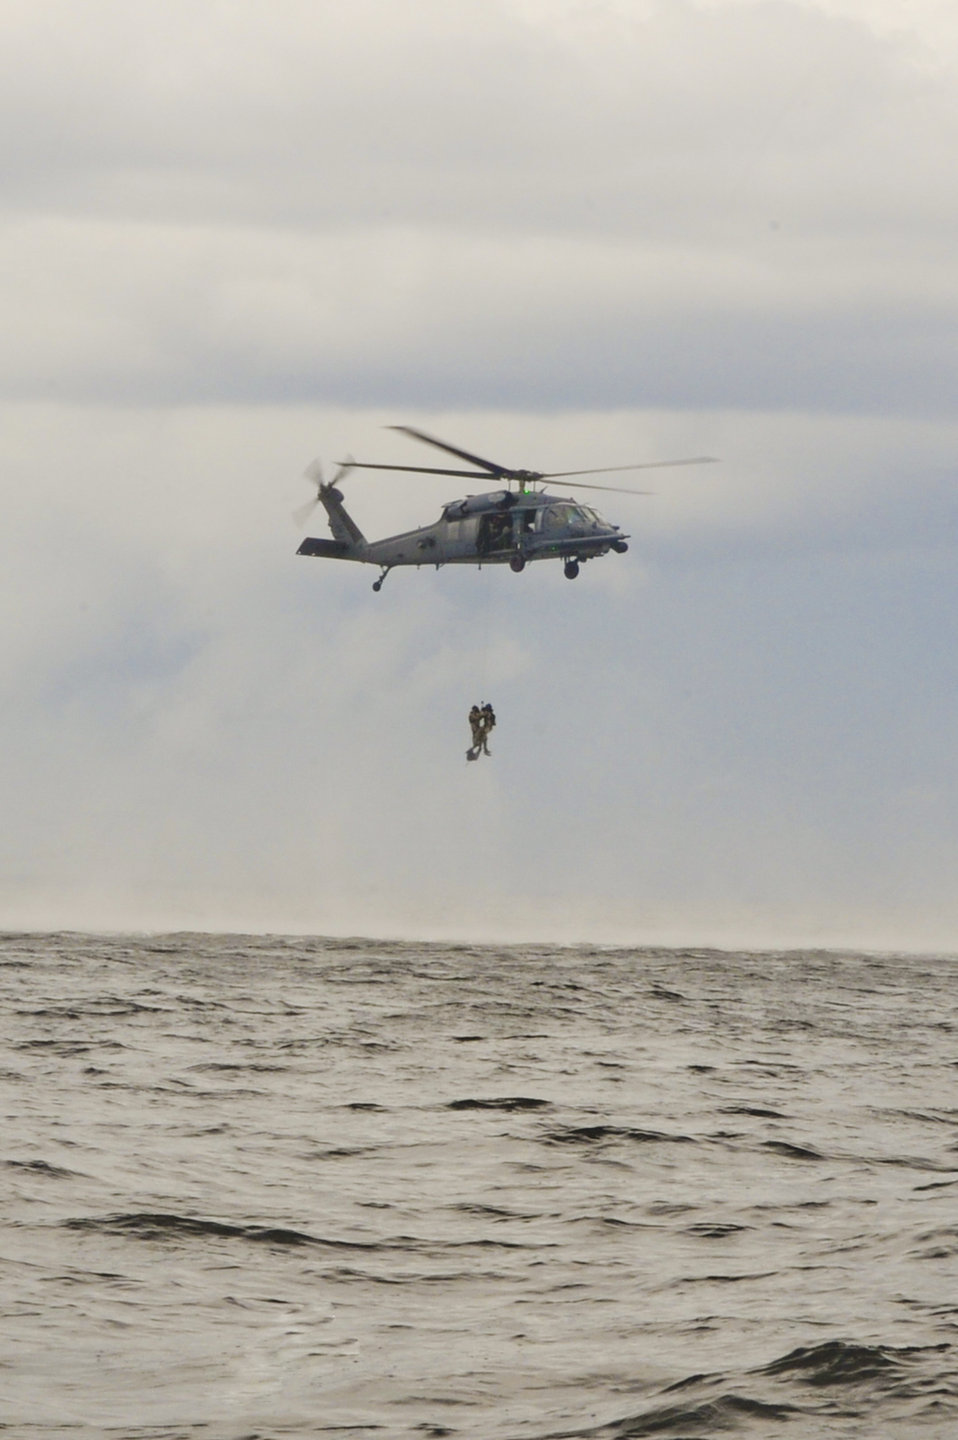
Water rescue

An HH-60 Pave Hawk with the 41st Rescue Squadron at Moody Air Force Base, Ga., hoists up two pararescuemen during water training in the Gulf of Mexico on Aug. 14, 2012. The Pave Hawk has multiple ways to retrieve personnel from the land and sea.